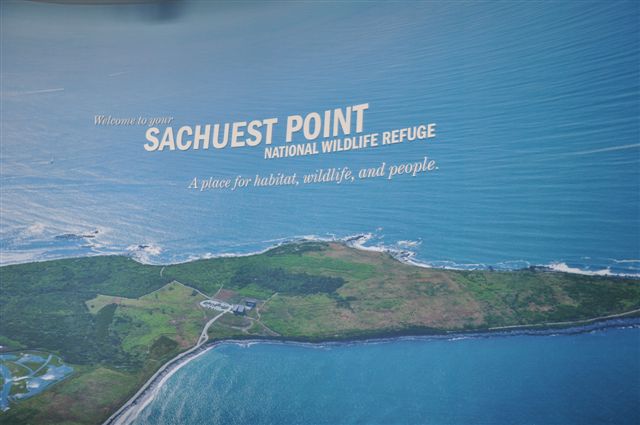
Welcome kiosk at the visitor center

A welcome kiosk at the Sachuest Point National Wildlife Refuge visitor center, which re-opened with newly renovated exhibits on August 24, 2012.